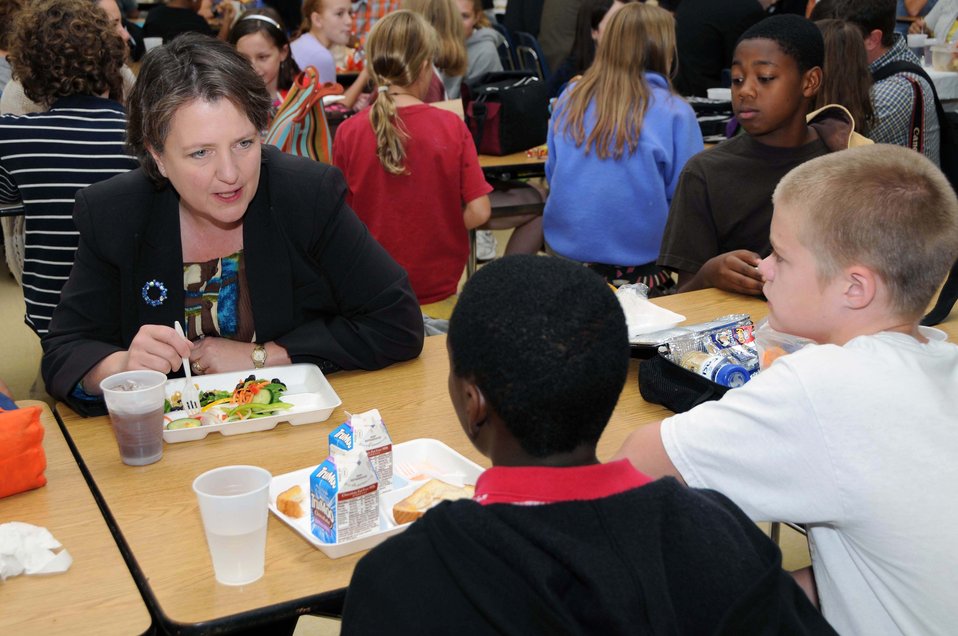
Agriculture Deputy Secretary Kathleen Merrigan chats with Carl G. Renfroe Middle School students during lunch while visiting their school in Decatur, Ga., during National School Lunch Week and Farm to School Month on Friday, October 14, 2011.